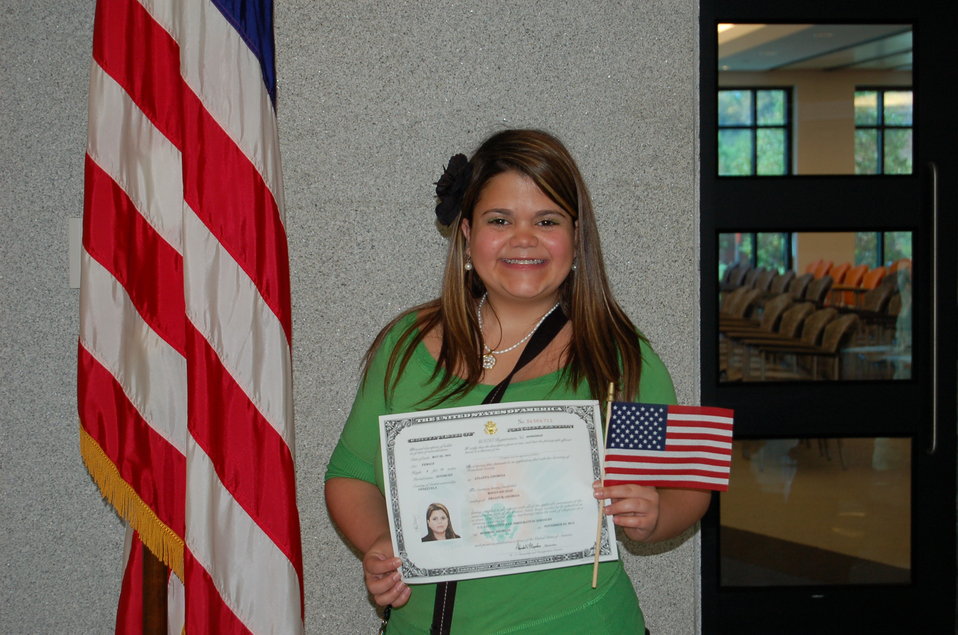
New Citizens